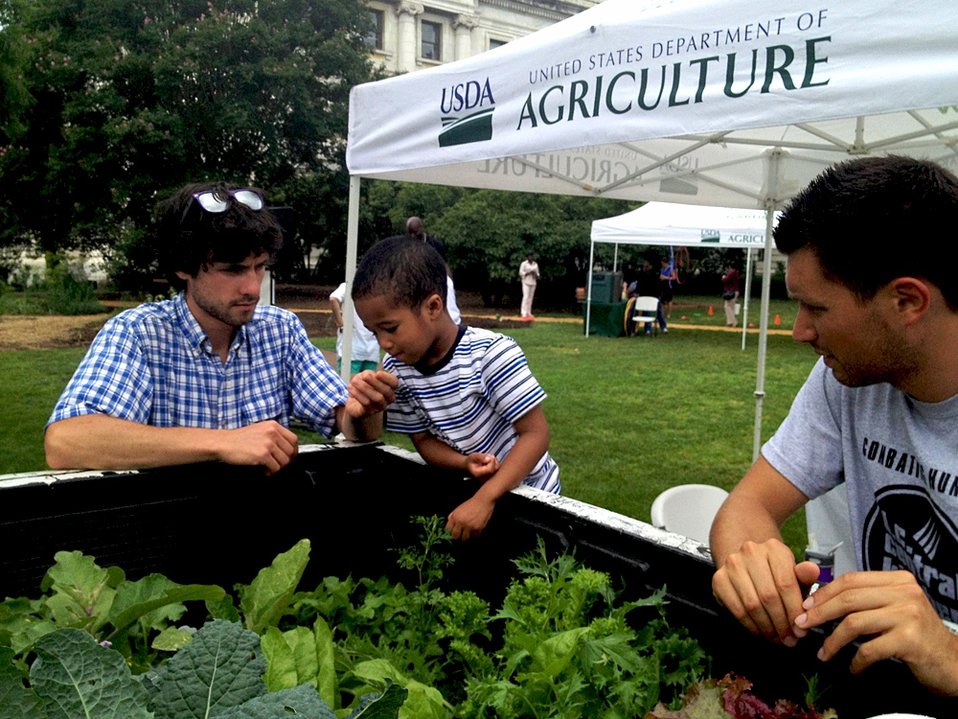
Bronson Brown explores tje DC Truck Farm with truck farmers from DC Central Kitchen on the opening day of the U.S. Department of Agriculture (USDA) Farmers Market, in Washington, D.C. on June 1, 2012. Children had the opportunity to participate in a day filled with hands-on activities to help enhance their commitment to healthy eating and 60 minutes of physical activity every day.